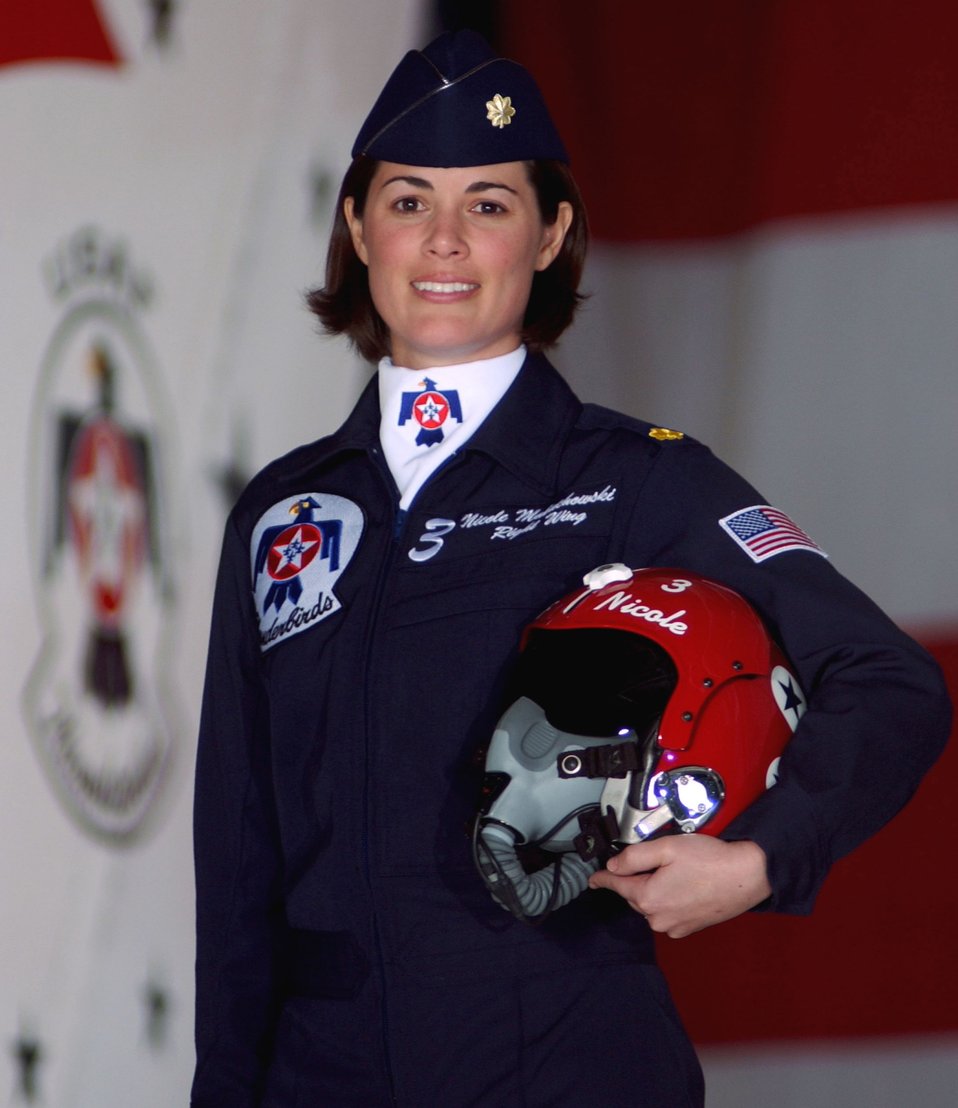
Thunderbird enters Forest of Friendship

Maj. Nicole Malachowski was inducted into the International Forest of Friendship June 16 at the